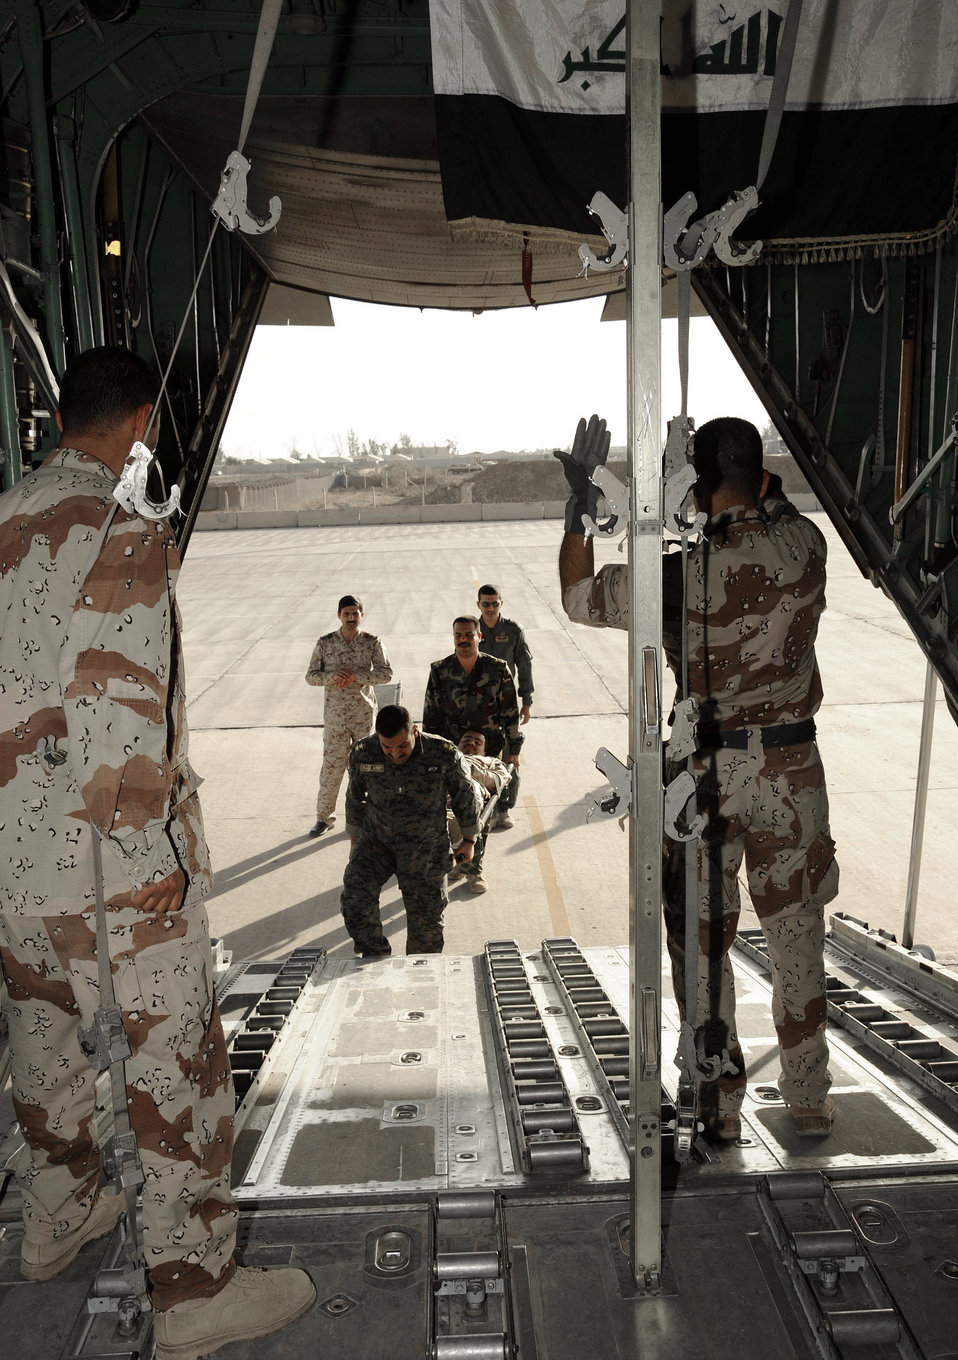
Air Force flight surgeons train Iraqi counterparts

Iraqi air force Lt. Tahssen marshals in a litter during the aeromedical evacuation class for the Flight Surgeon Course April 20 at New al-Muthana Air Base, Iraq. The training is teaching the Iraqis how to convert a UH-1 Huey and a C-130 Hercules from a passenger transport to an aeromedical evacuation medevac transport. Lieutenant Tahssen is a flight nurse at the New al-Muthana Air Base clinic.